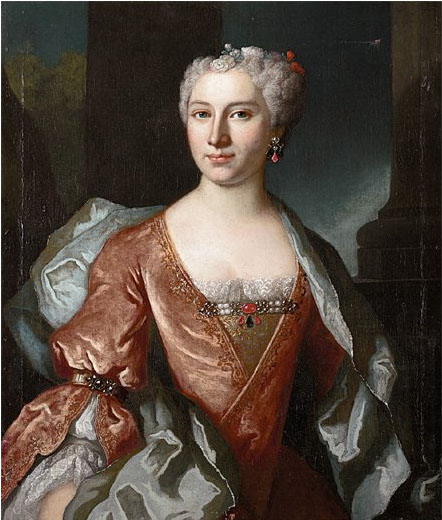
Femme Binoche lot 6 14-11-2007